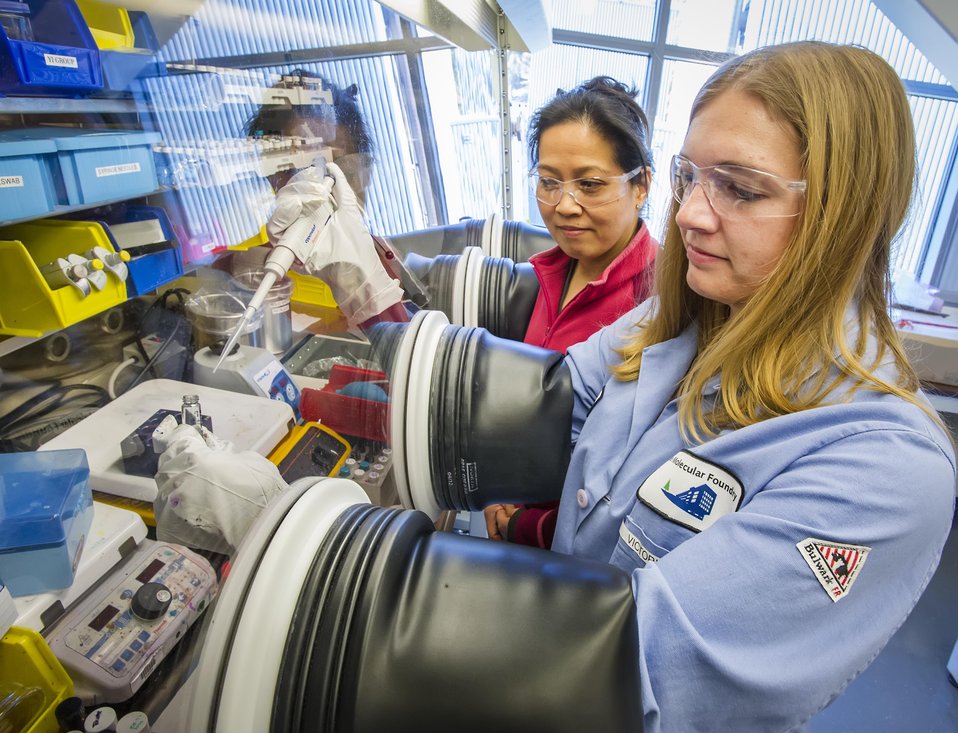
An intern and mentor participating in Lawrence Berkeley National Laboratory's Center for Science and Engineering Education (CSEE).

The CSEE is LBNL's mission to inspire and prepare the next generation of scientists and engineers.